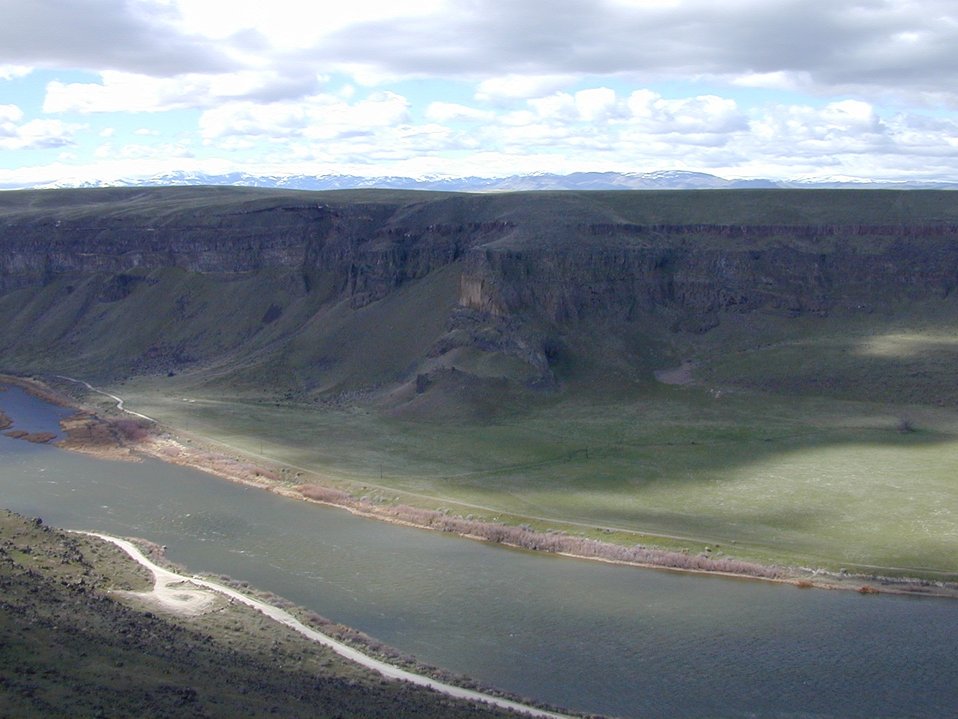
Snake River Birds of Prey National Conservation Area Lower Snake River District LSRD Snake River Canyon Scenic